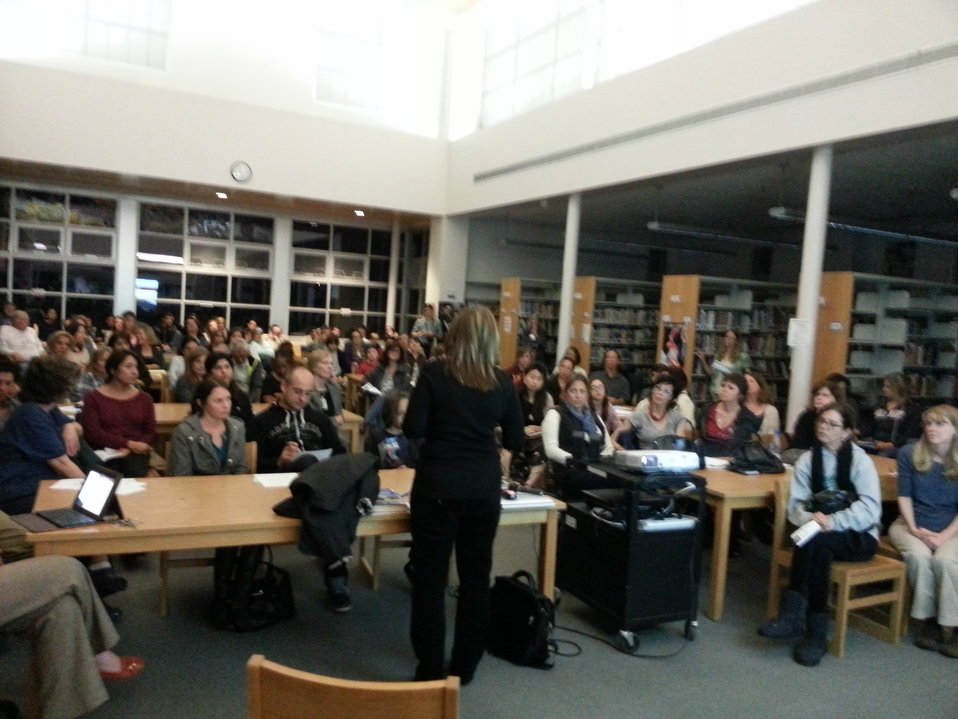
CV Alliance